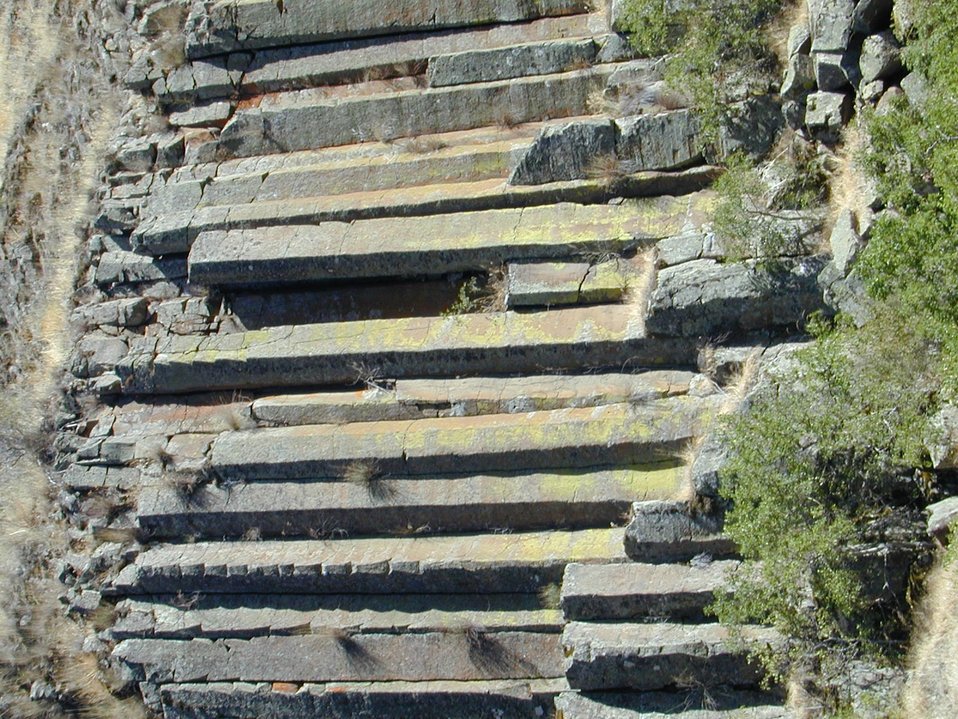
Hexagonal Basalt along the Lower Salmon River Cottonwood Field Office UCSC Upper Columbia Salmon Clearwater District